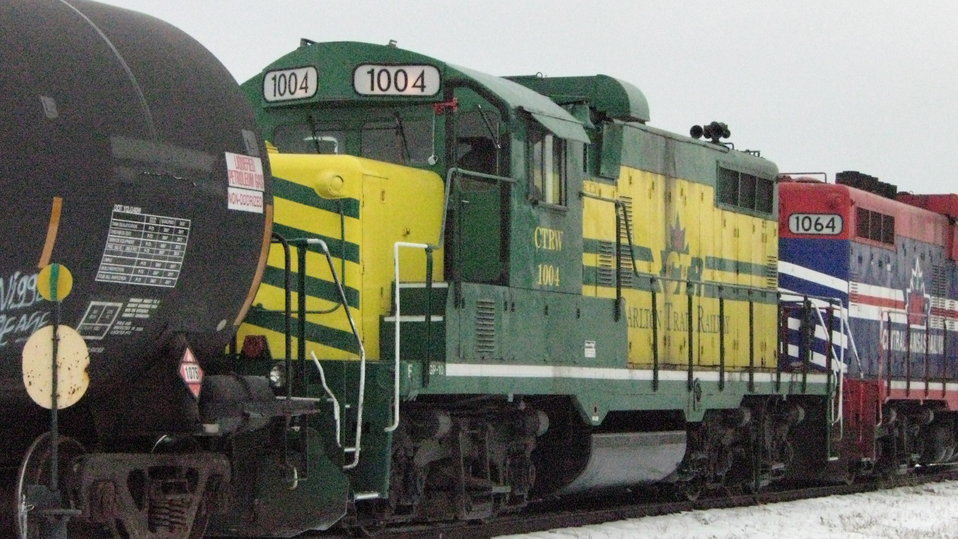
Taken Nov 18/08 in Prince Albert, Sask, of a Carlton Trail Railway Diesel. Taken by myself.
Taken Nov 18/08 in Prince Albert, Sask, of a Carlton Trail Railway Diesel. Taken by myself.